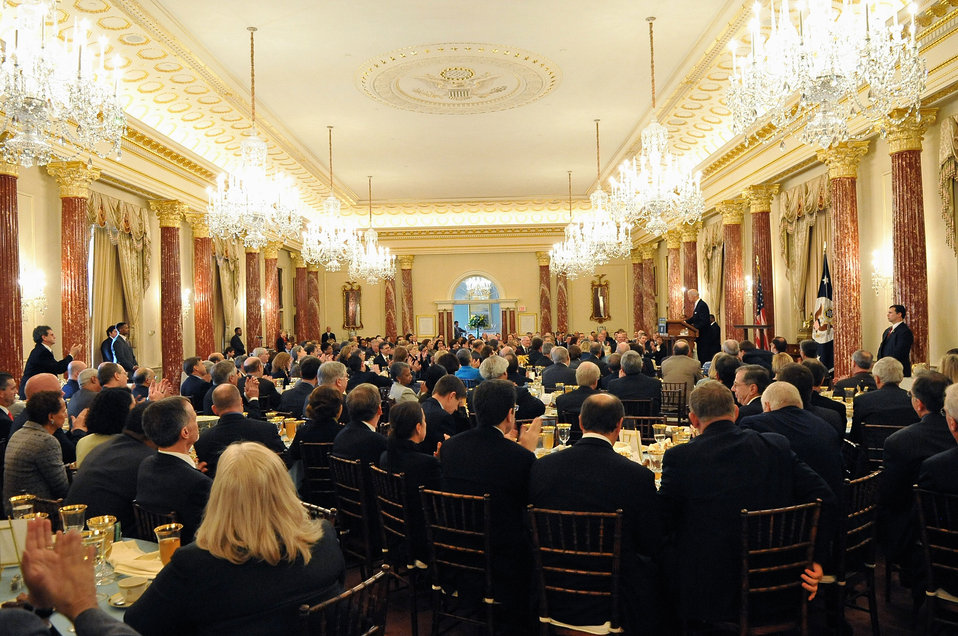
Admiral Mullen Delivers Remarks

Chairman of the Joint Chiefs of Staff, Admiral Michael Mullen, delivers remarks at the 2011 Global Chiefs of Mission Conference at the U.S. Department of State in Washington, D.C., on February 2, 2011.